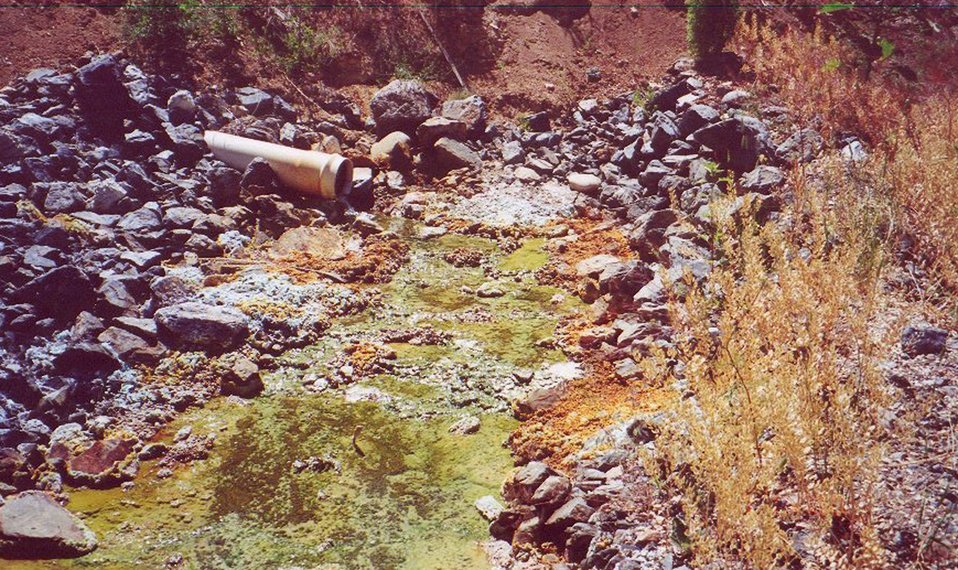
Moran Tunnel Mine adit empties into Champagne Creek pH of water is 2.5 to 3.5 Water is blue-green from copper sulfate Idaho Falls Field Office USRD Upper Snake River District